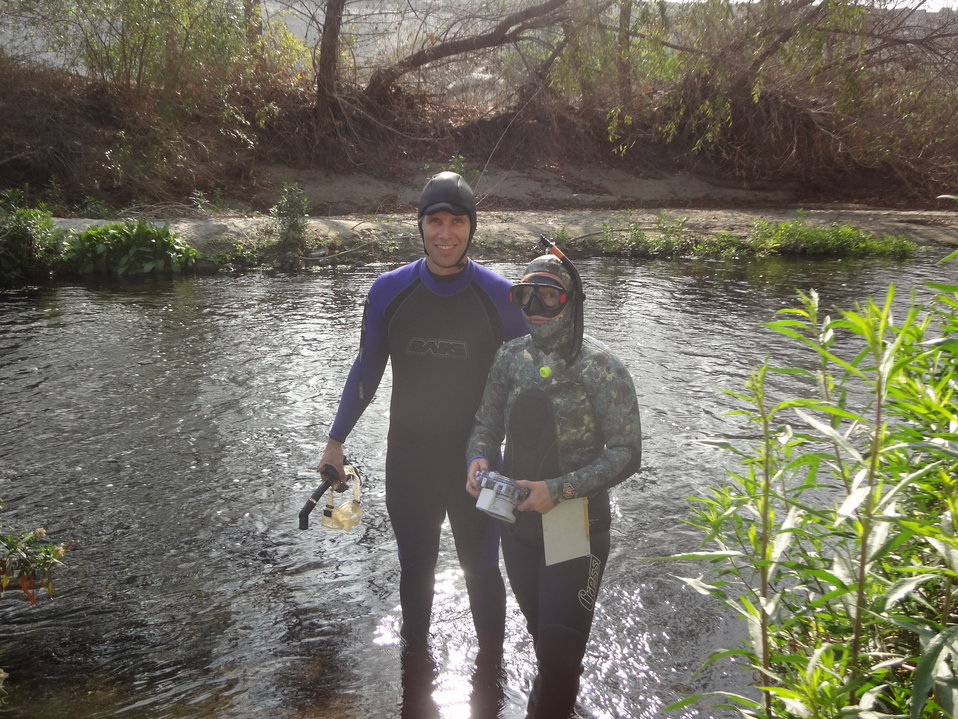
Fish and Wildlife Biologists

U.S. Fish and Wildlife Biologists Kai Palenscar and Christine Medak all suited up and ready to get some footage of Santa Ana suckers.